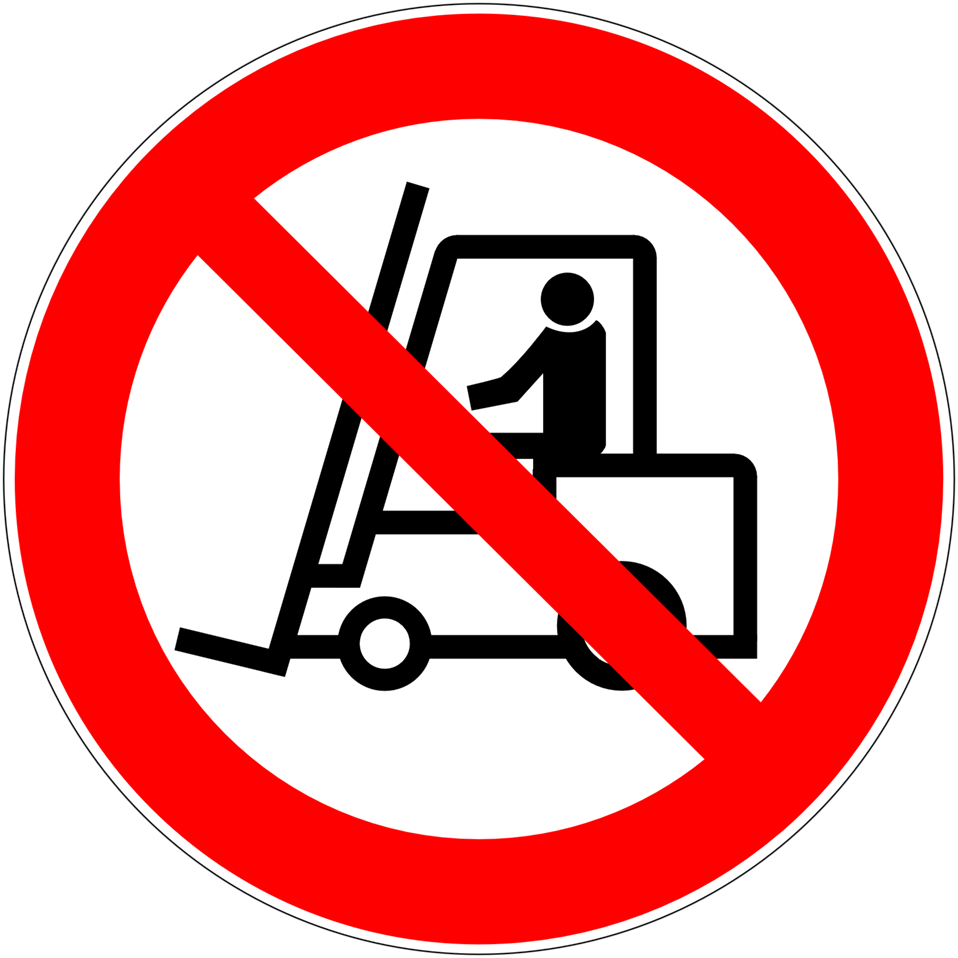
Deutsch: Für Flurförderzeuge verboten, Verbotszeichen D-P007 nach DIN 4844-2